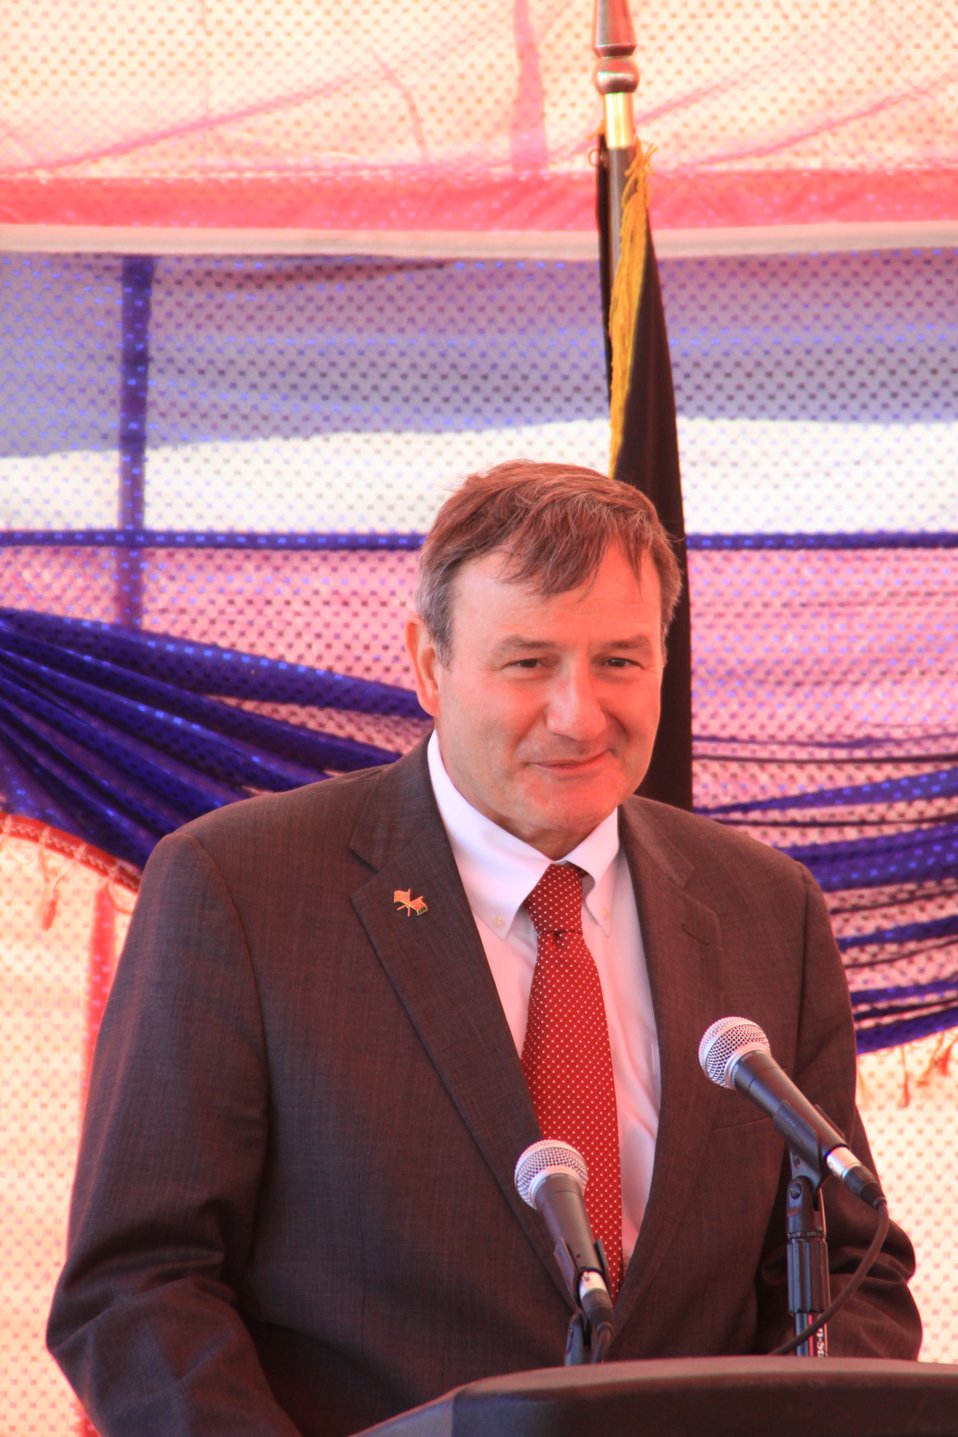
AVIPA Plus Wheat Seed Distribution 101005